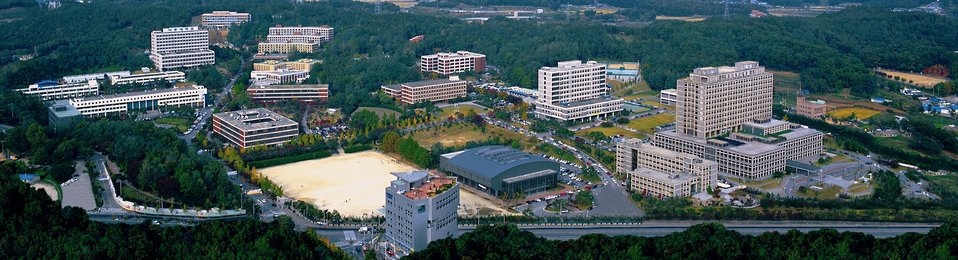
Ajou University Campus is renowned for its beauty and bustles with student life. . Fran√ßais†: Le campus (√† droite l'hopital et l'√©cole de m√©decine).